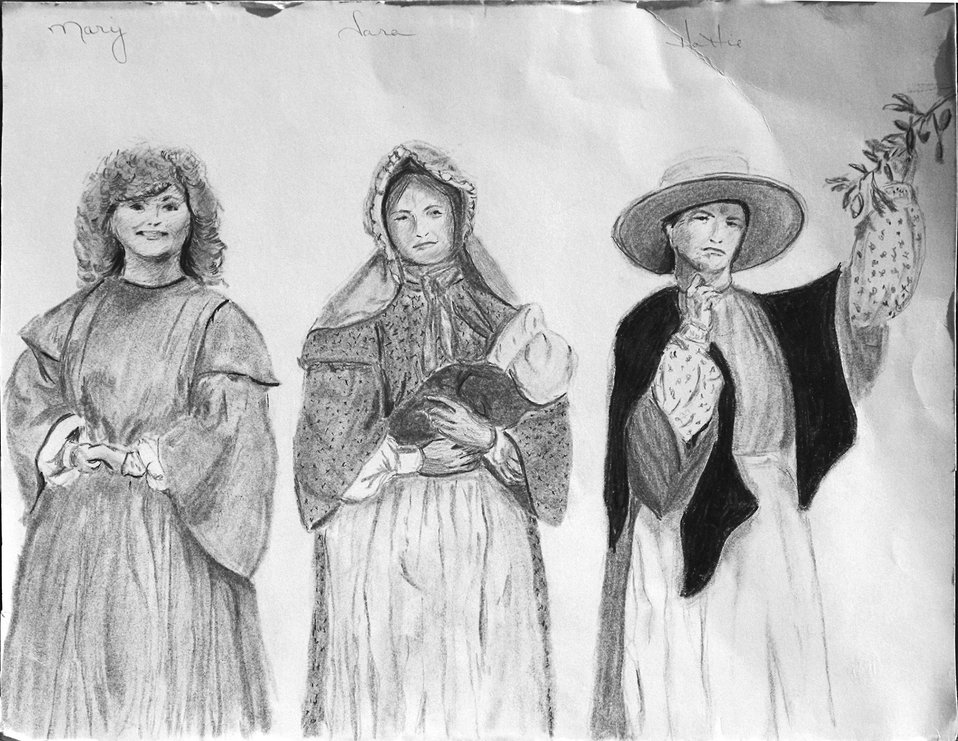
Character artwork by Sarah LeCompte for Nancy Harms's "From Spinning Wheels to Wagon Wheels".